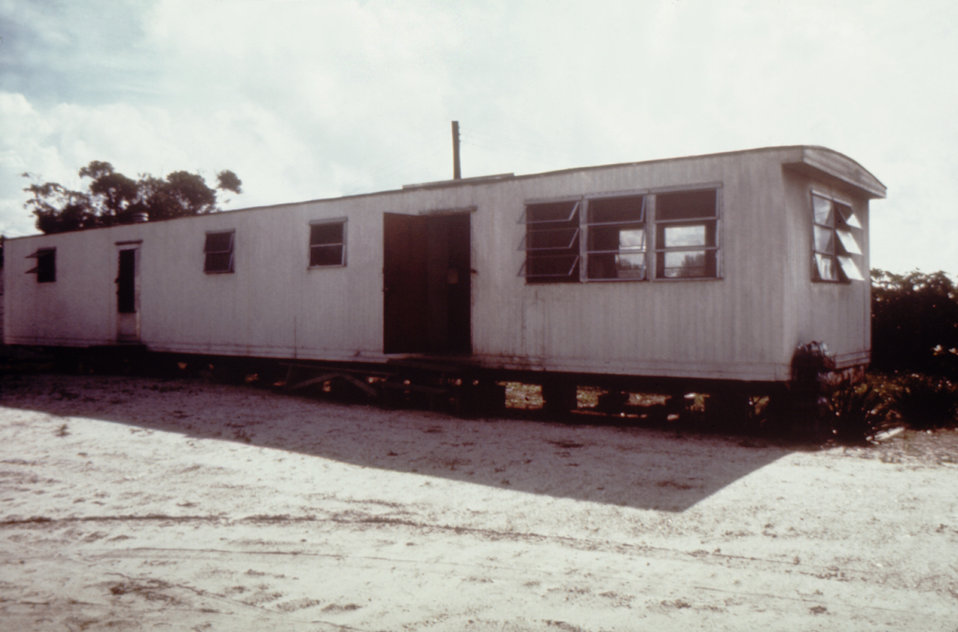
This image shows a dining-trailer in which public health inspectors investigated the possible health threats to dining workers.